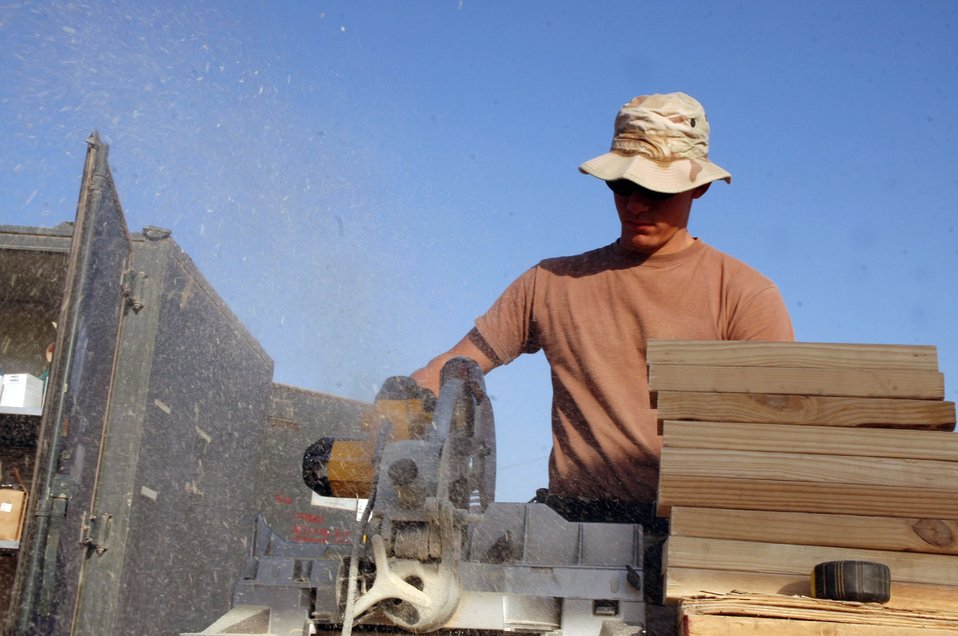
Airmen build Army post

FORWARD OPERATION BASE QAYYARAH WEST, Iraq (AFPN) -- Senior Airman Thomas Miller cuts a stabilizing block for a new building here. Airman Miller is a carpenter with the 557th Expeditionary Red Horse Squadron and deployed from Ellsworth Air Force Base, S.D.